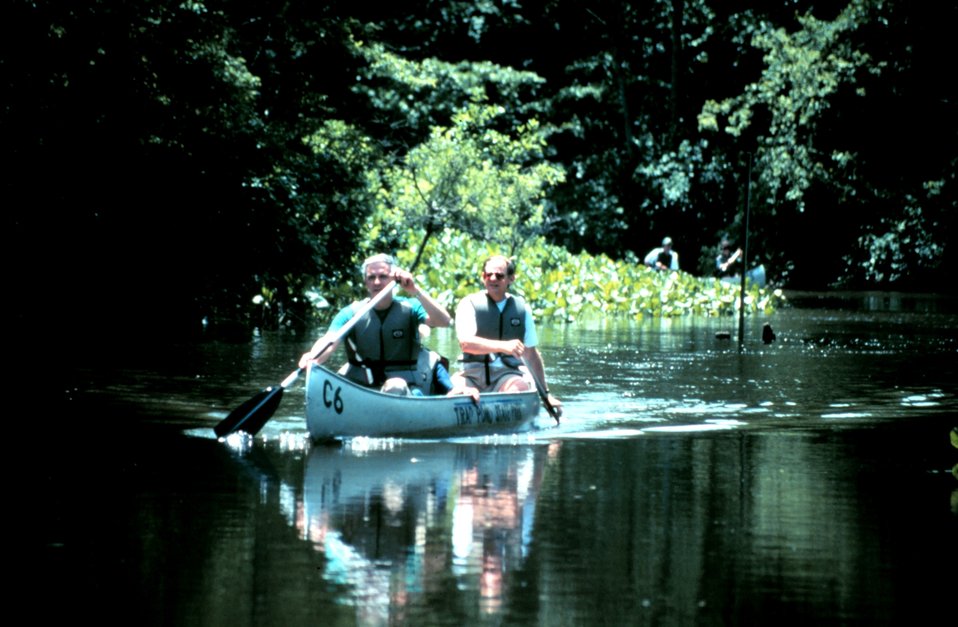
Delaware National Estuarine Research Reserve. Canoeing is a great way to visit parts of our National Estuarine Research Reserves.